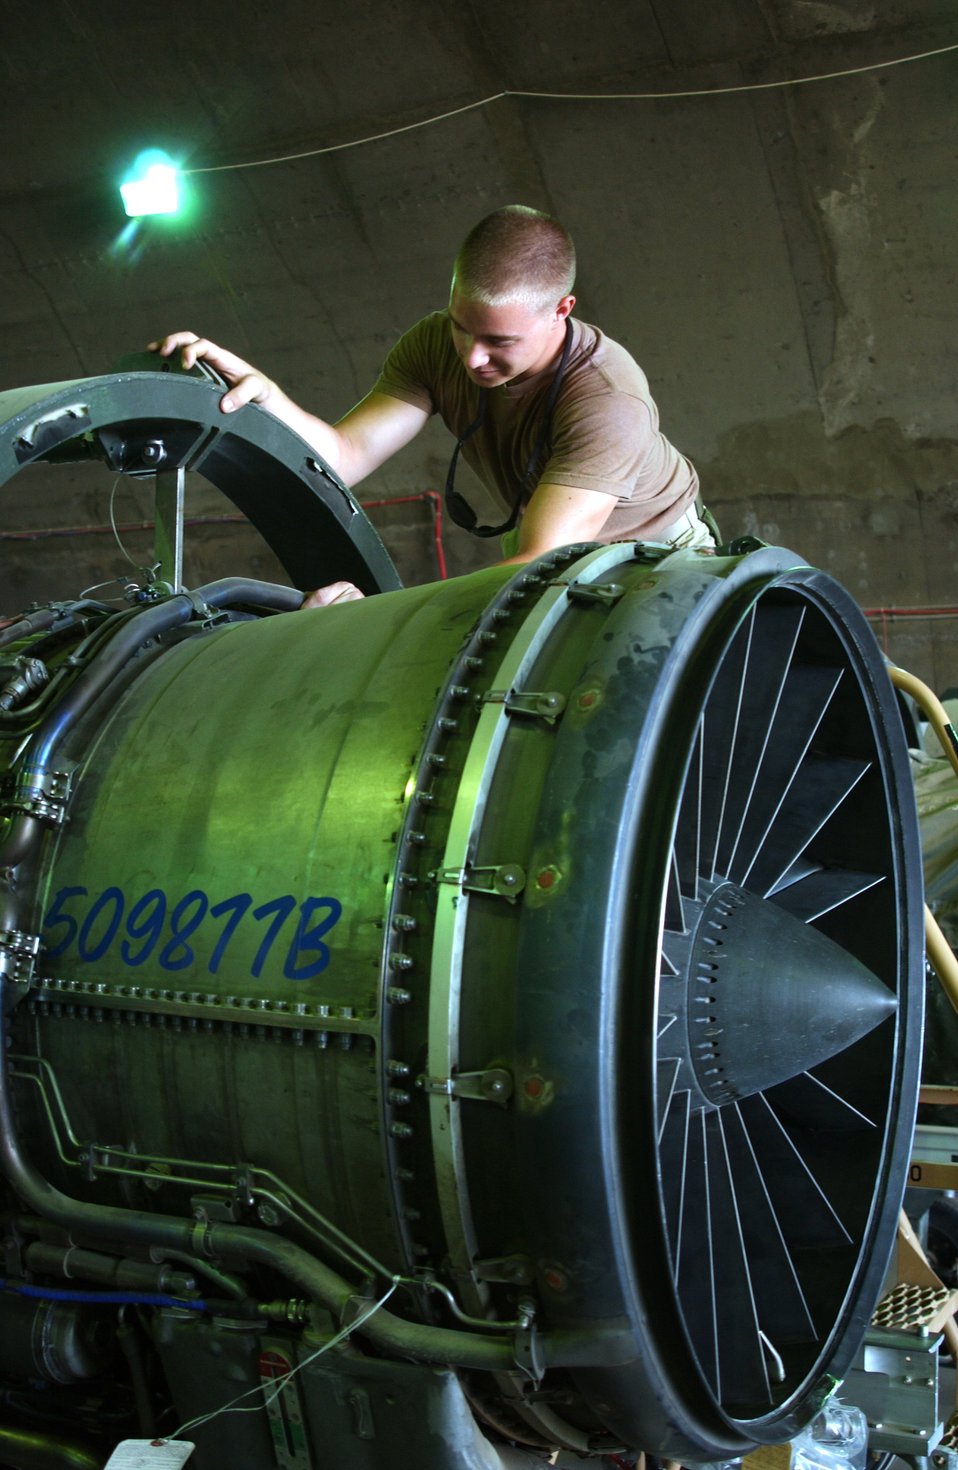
Tigers give Falcons flight

Senior Airman Joshua Harrison inspects a spare F-16 Fighting Falcon engine at Balad Air Base, Iraq. The Airman is a jet engine mechanic with the 332nd Expeditionary Aircraft Maintenance Squadron aircraft maintenance unit.